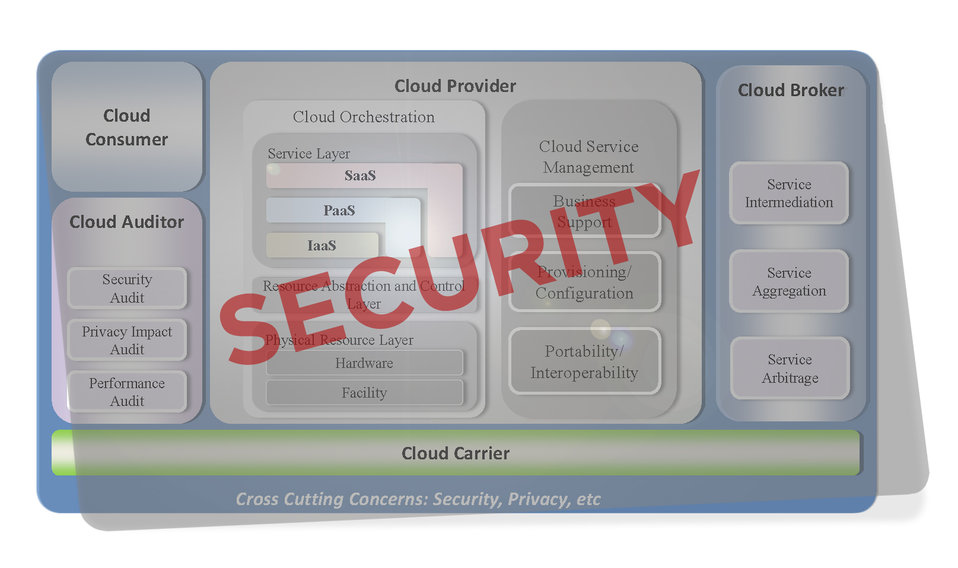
NIST Cloud Computing Security Reference Architecture

The NIST Cloud Computing Security Reference Architecture provides a security overlay to the NIST Cloud Computing Reference Architecture published in 2011.